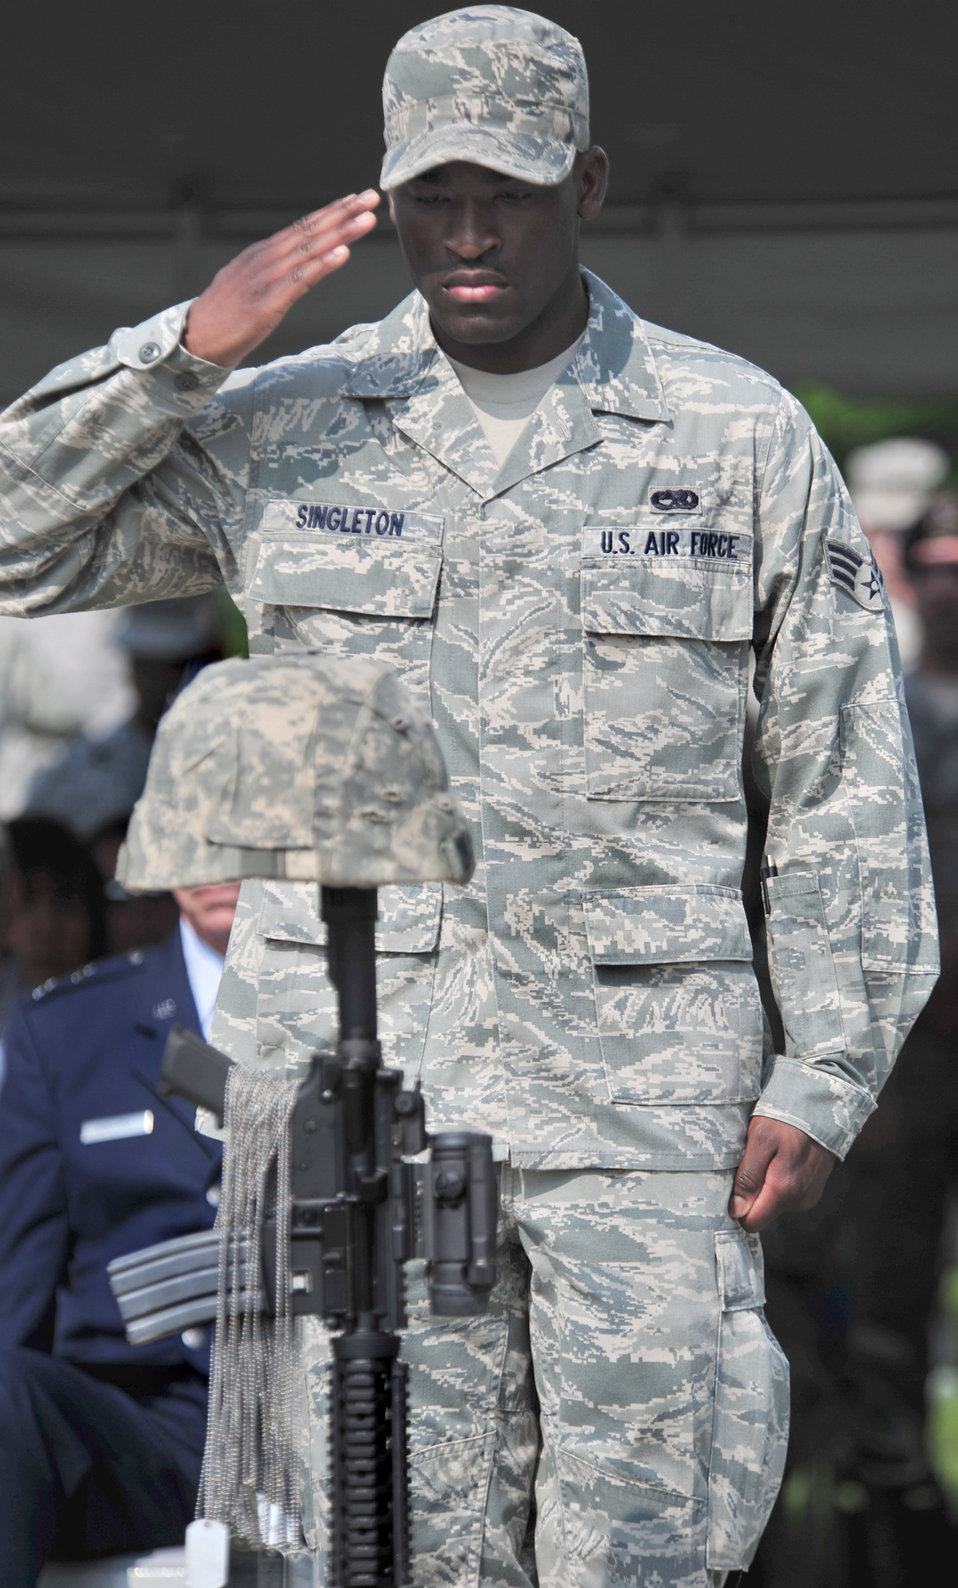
Fallen Airmen Memorial

Senior Airman Terrell Singleton salutes the battle field cross after placing the dog tags of a fallen Airman on the cross at the dedication ceremony for the Fallen Airmen Memorial June 2, 2010, at Memorial Lake, S.C. Airman Singleton is a technician at the precision measurement equipment laboratory with the 20th Component Maintenance Squadron.